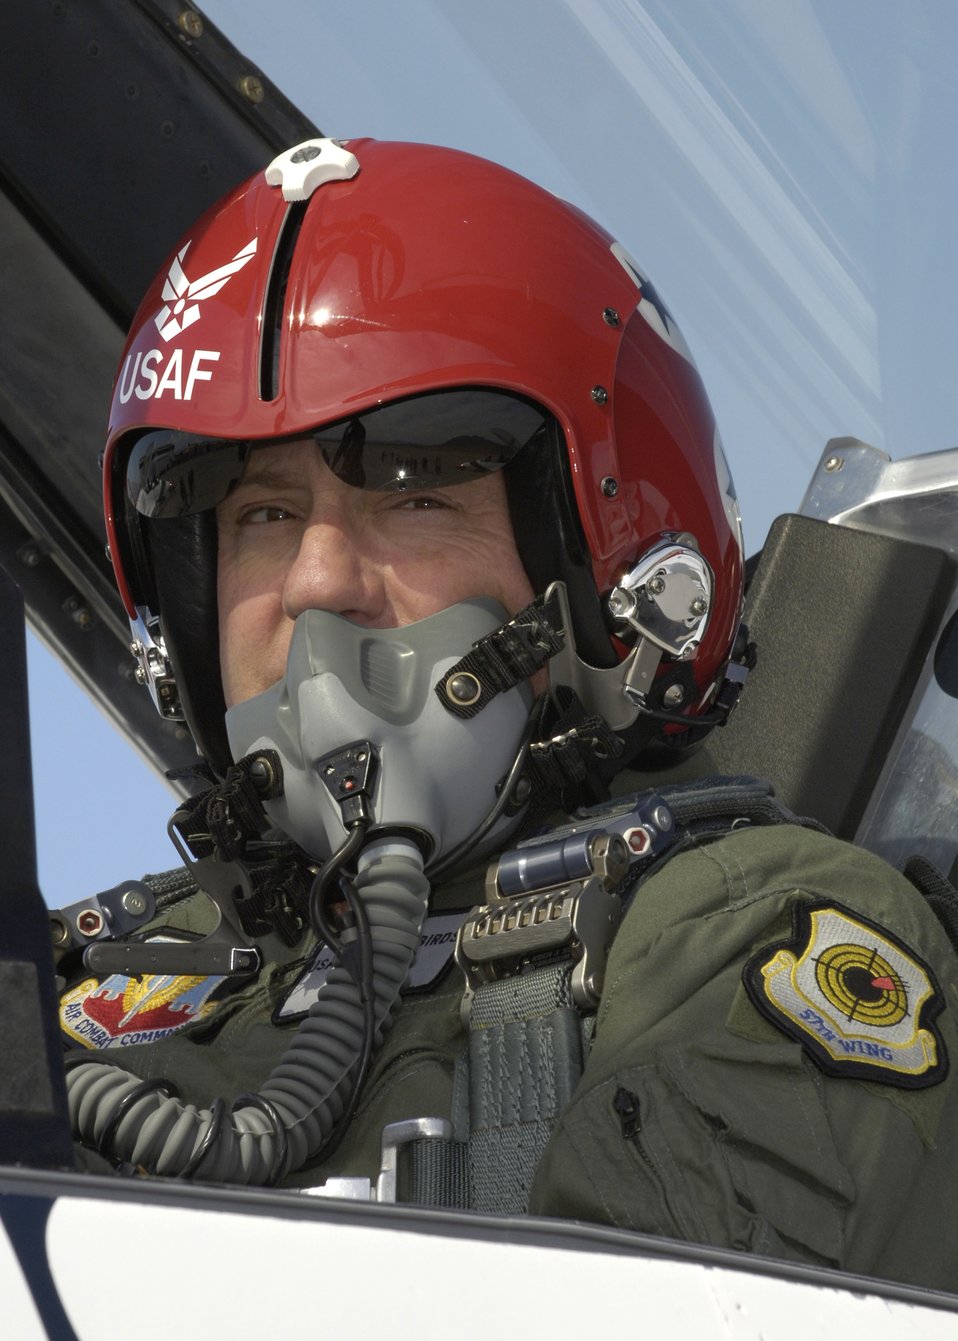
Thunderbird flight

Kenny Schrader, driver of the Air Force #21 Wood Brothers/JTG Ford Fusion concentrates on his flight with the Air Force Thunderbirds. Mr. Schrader received an orientation flight, Thursday, Mar. 9, 2006.